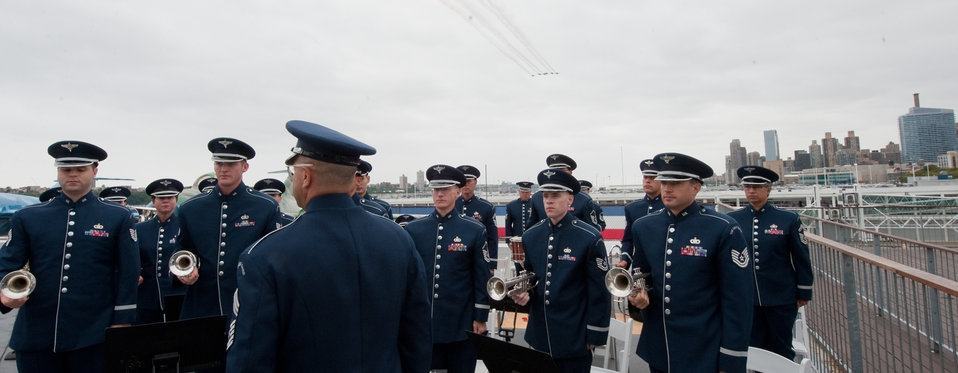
Air Force Week New York City Proclamation Ceremony

The Air Force Band stood at attention during the flyover of the Air Force Domonstration Team, The Thunderbirds during the Air Force Week New York City proclamation ceremony at the USS Intrepid on Aug. 24, 2010. The event at the Intrepid Sea, Air & Space Museum was highlighted by a six-ship flyover by the USAF Thunderbirds. The Honorable Michael Donley, Secretary of the Air Force attended, along with General Raymond Johns, Commander of Air Mobility Command. The Police Commissioner of the City of New York, the Honorable Raymond Kelly, represented NYC. Mr. Greg Kelly of